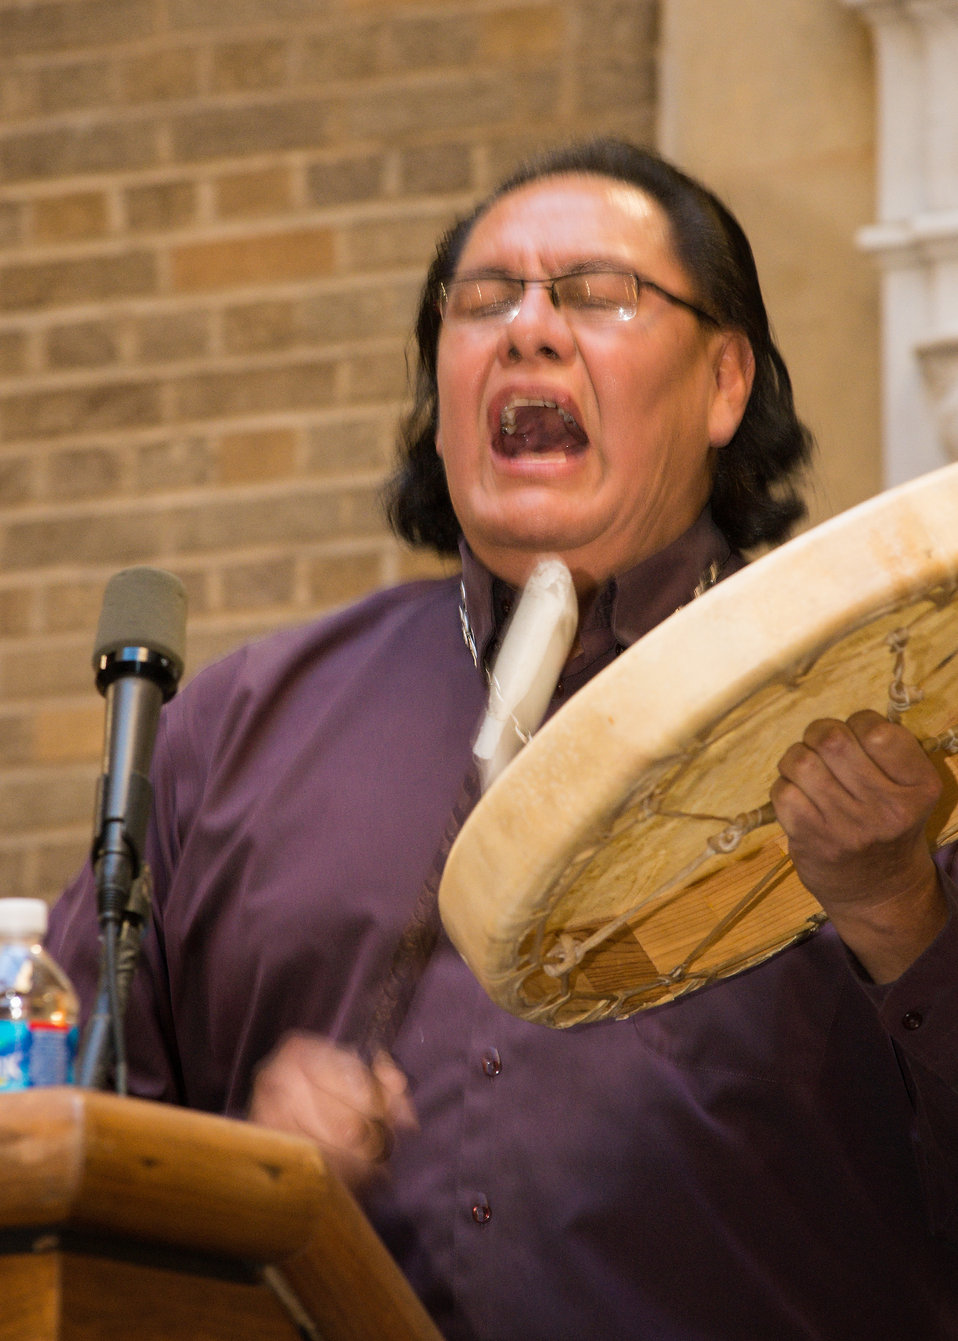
National American Indian Museum employee Dennis Zotigh performs the music of American Indian tribes from across the U.S. at the 2013 American Indian and Alaska Native Heritage Observance at the U.S. Department of Agriculture (USDA), on Thursday, Nov. 14, 2013 in Washington, D.C. The theme of this year’s event was “Guiding Our Destiny with Heritage and Traditions.”